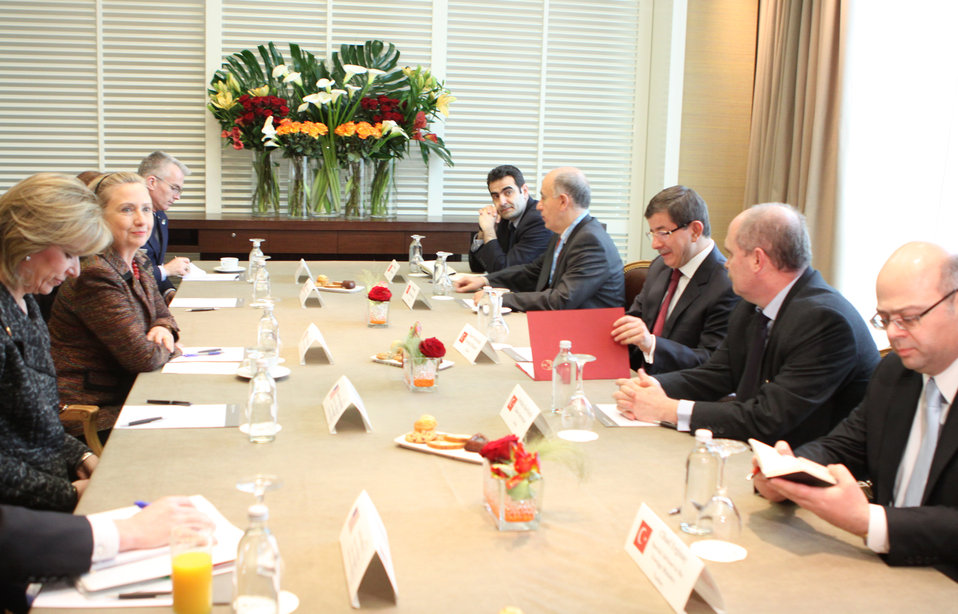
Secretary Clinton Meets With Turkish Foreign Minister Davutoğlu

U.S. Secretary of State Hillary Rodham Clinton meets with Turkish Foreign Minister Ahmet Davutoğlu at the Hotel Intercontinental in Geneva, Switzerland, on February 28, 2011. The meeting took place on the sidelines of the High Level Segment of the Human Rights Council which brought together many foreign ministers in Geneva.